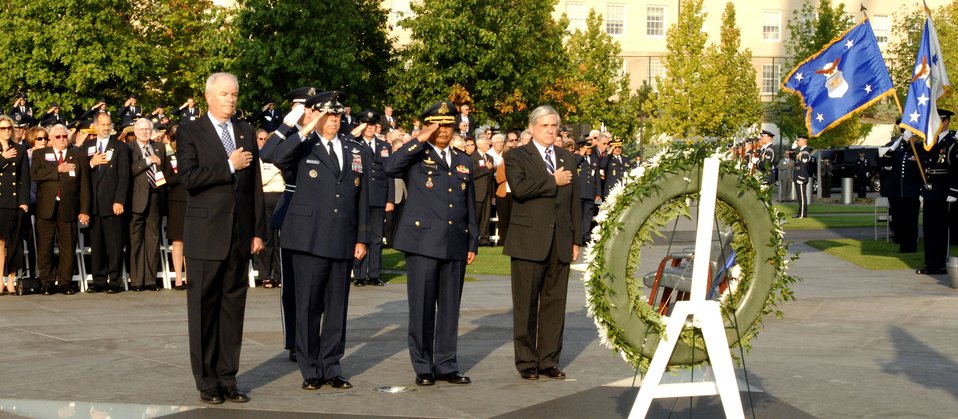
In remembrance

Secretary of the Air Force Michael W. Wynne (from left), Air Force Chief of Staff Gen. T. Michael Moseley, Cambodian Air Chief Lt. Gen. Soeng Samnang, and Air Force Association Chairman of the Board Robert Largent present a wreath on behalf of AFA at a Sept. 23 ceremony at the Air Force Memorial in Arlington, Va. The annual AFA Conference and Technology Exposition and the Air Force chief of staff are hosting the Global Air Chiefs Conference Sept. 24 to 26. More than 80 air chiefs from around the globe are attending the conference.